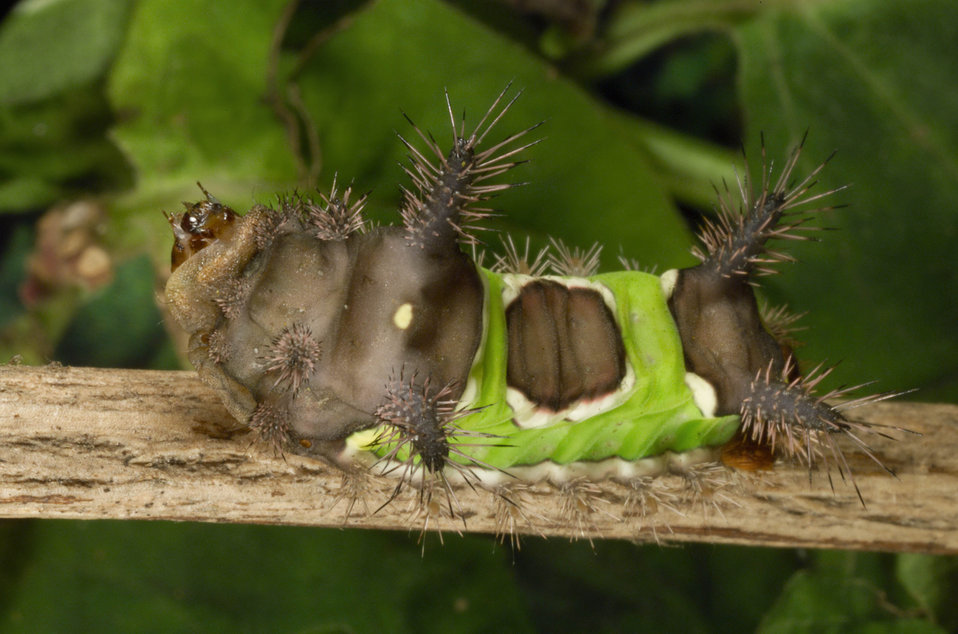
This 2001 photograph depicted a left lateral, or side view of a poisonous saddleback caterpillar, which is actually the 'instar', or developmental stage through which the saddleback caterpillar moth, Sibine stimulea passes on its way to becoming an adult, or 'imago', moth.